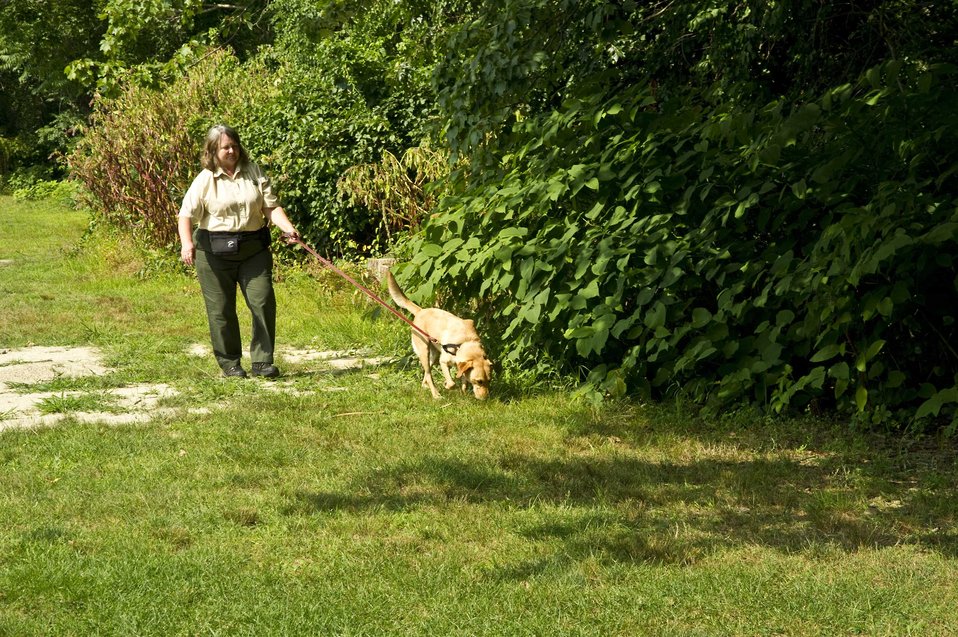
U.S. Department of Agriculture (USDA) Animal and Plant Health Inspection Service (APHIS) training technician Kathleen Warfield works with Asian Longhorned Beetle (ALB) Detector Dog Blaze to detect beetle “frass” or excrement in a forested are in Worcester, MA on Aug. 1, 2012. The ALB is an invasive insect that is killing trees in Massachusetts, New York, New Jersey and Ohio. Four dogs are currently being trained to recognize beetle “frass” that the beetle leaves behind. This study is part of an important mission to protect neighborhood trees and this country’s valuable forest resources from this harmful pest.